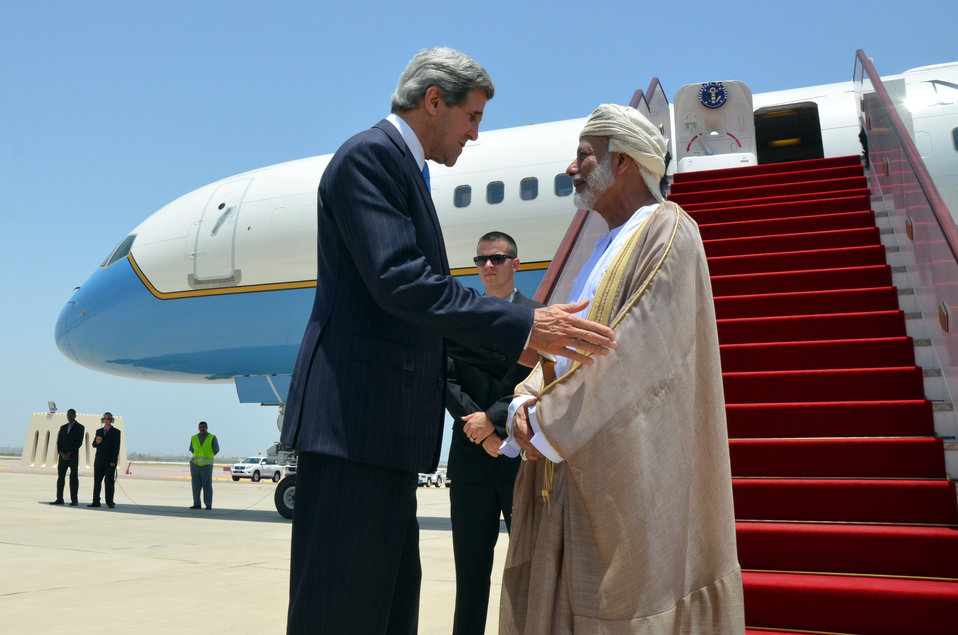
Secretary Kerry Bids Farewell to Omani Foreign Minister Yussef bin Alawi bin Abdullah

U.S. Secretary of State John Kerry bids farewell to Omani Foreign Minister Yussef bin Alawi bin Abdullah before departing Muscat, Oman, on May 22, 2013.